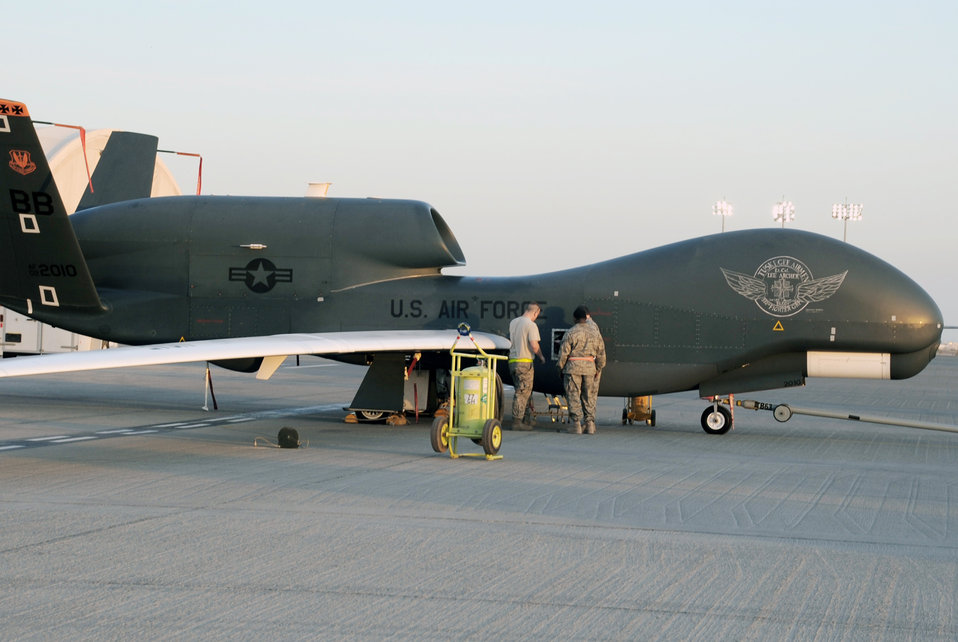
Deployed Global Hawks surpass 30,000 combat flying hours, 1,500 sorties

RQ-4 Global Hawk maintenance Airmen with the 380th Expeditionary Aircraft Maintenance Squadron Hawk aircraft maintenance unit go through pre-flight servicing while preparing a Global Hawk for a combat mission Feb. 12, 2010, in Southwest Asia. The RQ-4s, assigned to the 380th Air Expeditionary Wing and deployed from Beale Air Force Base, Calif., achieved 1,500 combat sorties and 30,000 combat flying hours on Feb. 10 and 11 respectively.